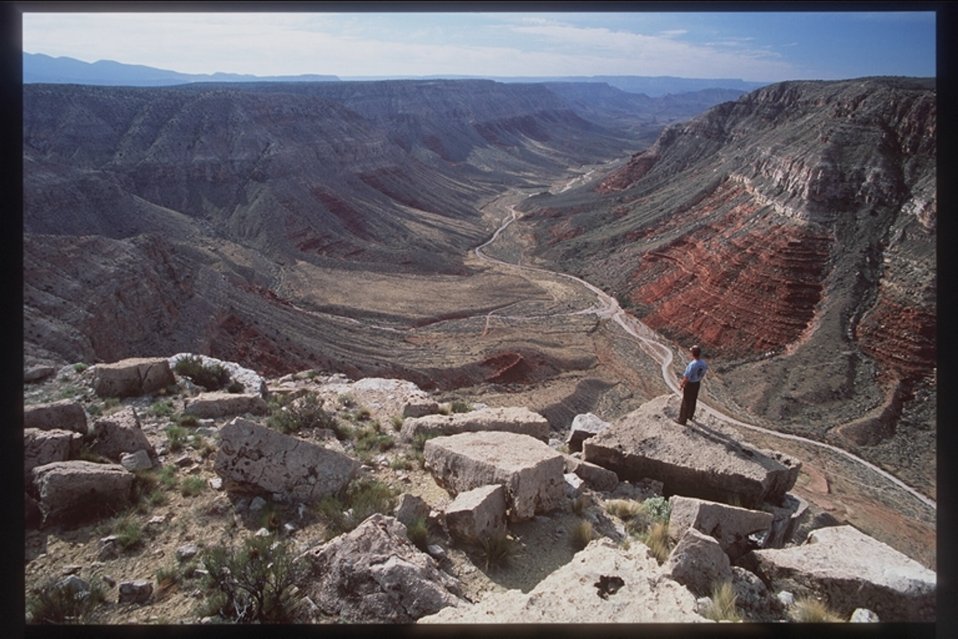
The majestic beauty of the Grand Canyon-Parashant stretches far into the horizon of this photograph.